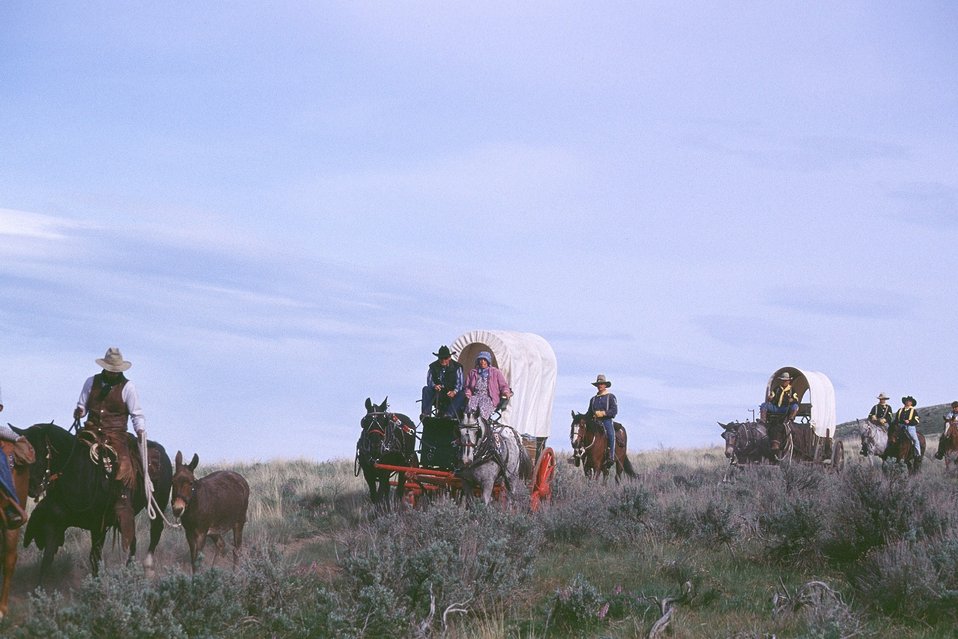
NHOTIC 10th Anniversary, wagon train reenactment.